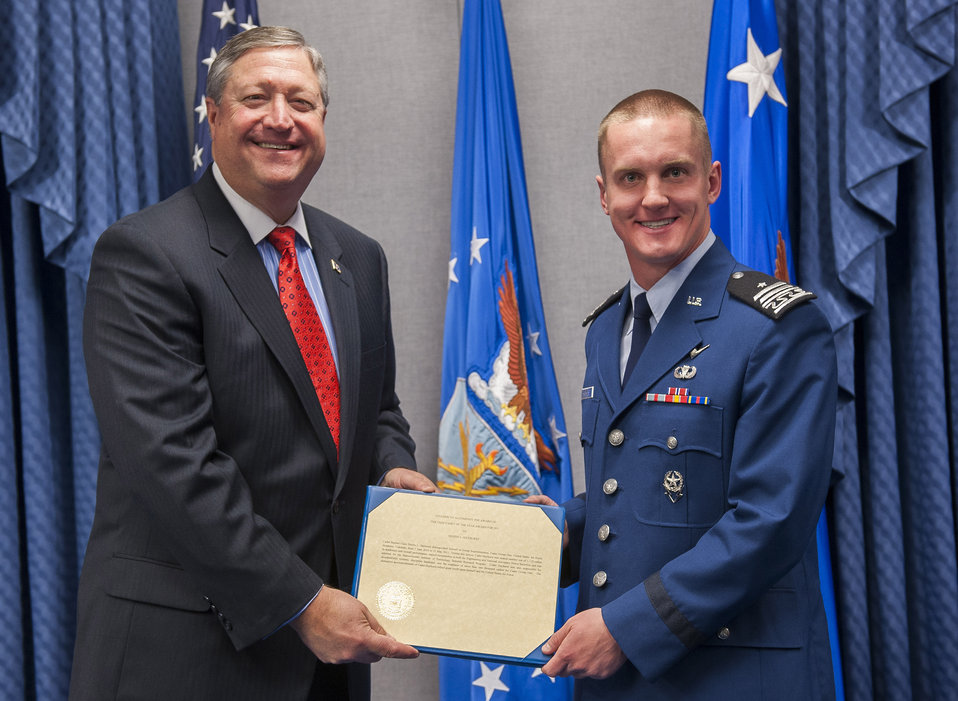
USAFA cadet honored as Cadet of the Year

Secretary of the Air Force Michael Donley (left) presents the 2011 U.S. Air Force Cadet of the Year Award to Air Force Academy Cadet 1st Class Dustin Hayhurst May 10, 2012, during a ceremony in the Pentagon in Washington, D.C. Cadet Hayhurst earned the award by demonstrating excellence in military skills, academics and athletics in an Air Force commissioning program